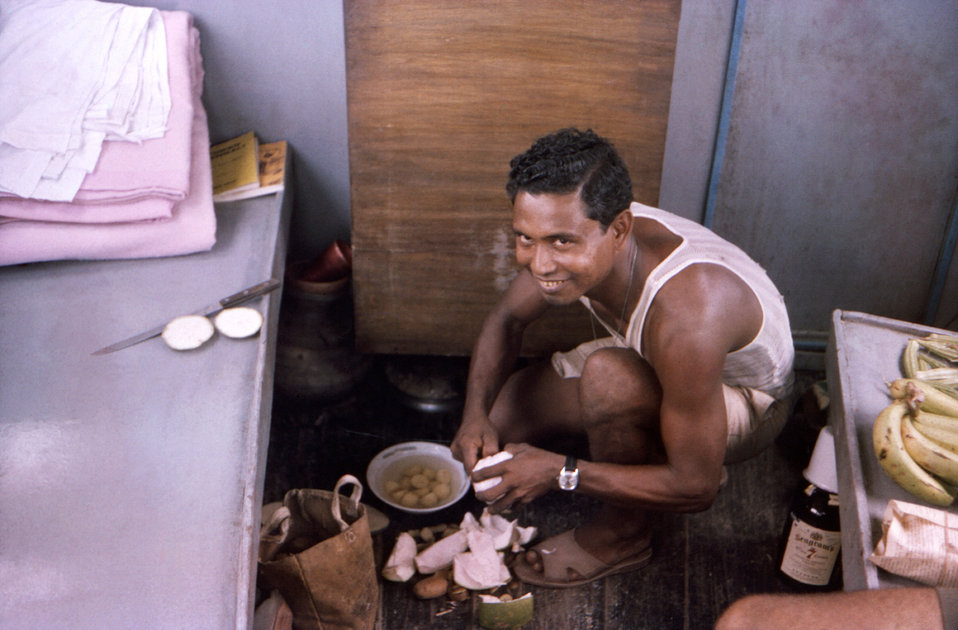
This October, 1975 photograph depicted boat Captain, and driver, Robin Gomes, while he was preparing a meal aboard a 'UNICEF 8' boat on a Patuakhali District waterway, in the country of Bangladesh.